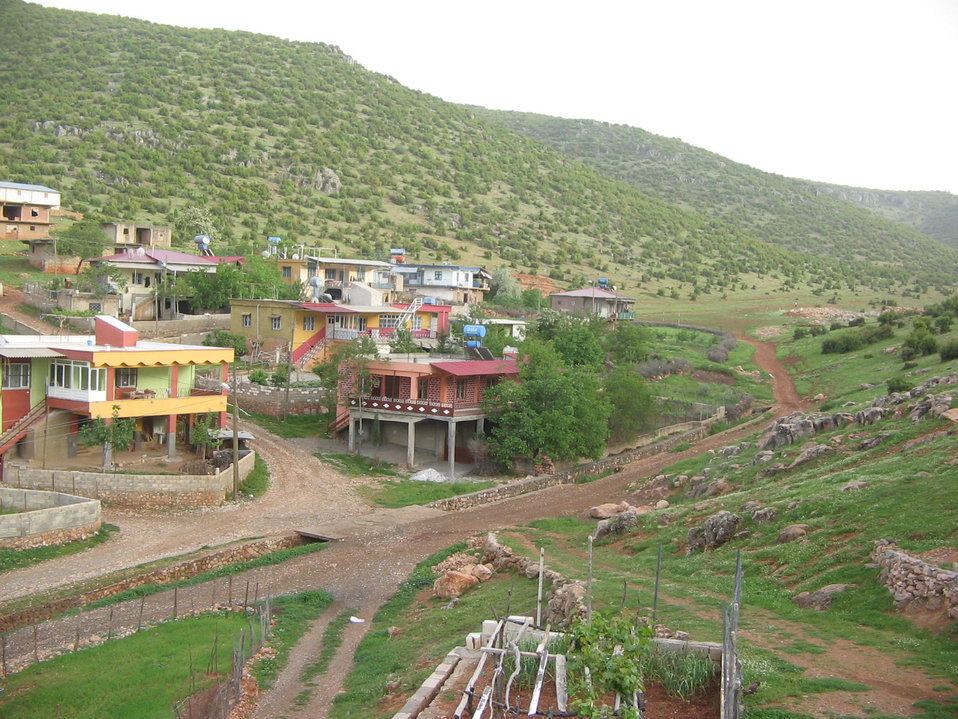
A view from Kurtdere, Pazarcık. Türkçe: Kurtdere, Pazarcık'tan bir görünüm.